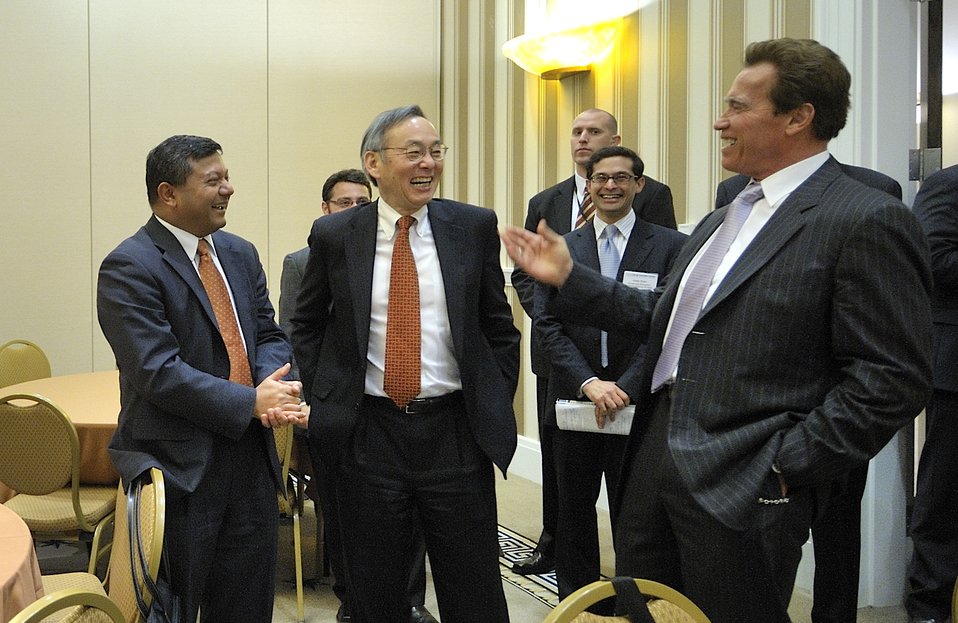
ARPA-E Energy Innovation Summit 2011, 4 of 83

Steven Chu, Secretary, United States Department of Energy along with Dr. Arun Majumdar, Director of ARPA-E, and Arnold Schwarzenegger, Former Governor of California surprise graduate students who traveled to the summit.